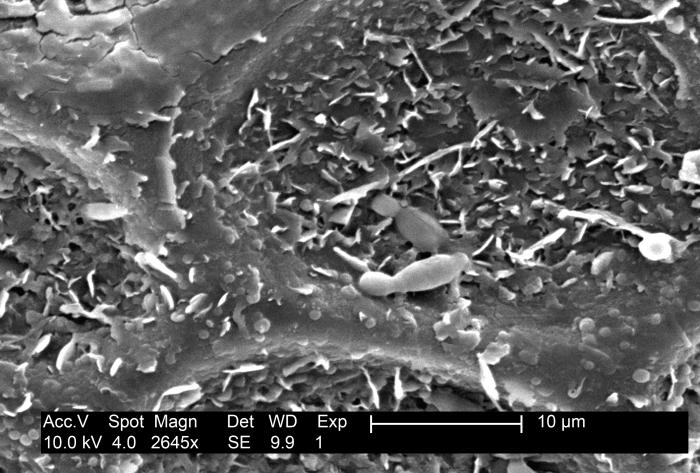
Magnified 2645X, this electron micrograph reveals the details of the textured surface found on a honeydew melon, Cucumis melo.Tips for Fresh Produce SafetyBuying Tips: